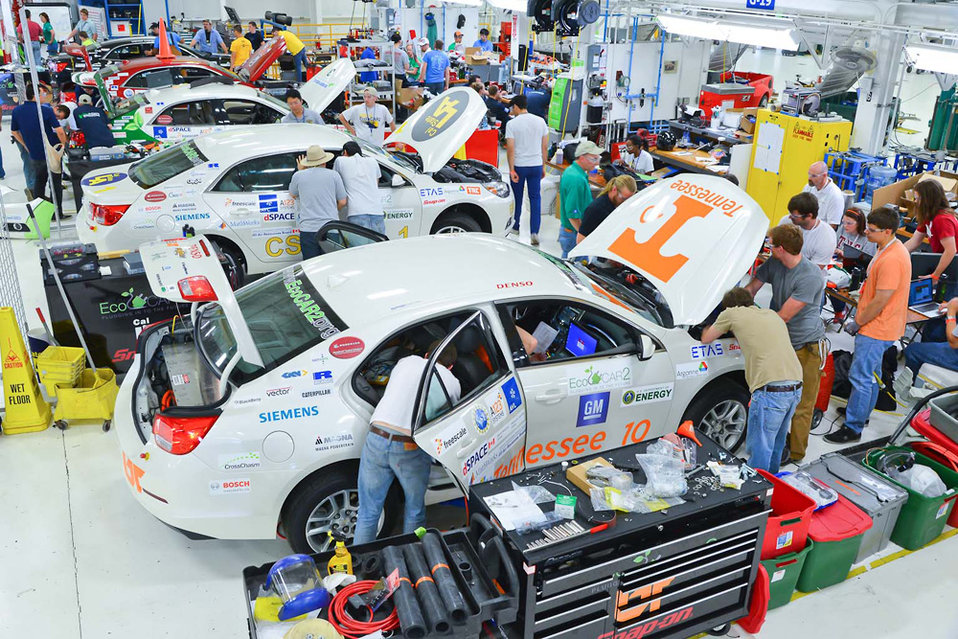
The 15 teams competing in EcoCAR 2 converged in Yuma, Arizona, for the Year 2 finals. The two-part competition consisted of on-road vehicle testing at the GM Desert Proving Grounds in Yuma and presentations in San Diego, California. In preparation for dynamic vehicle testing, which began with the crucial first step of a safety inspection, the University of Tennessee team is working on its car in the garage. | Photo courtesy of EcoCAR 2.